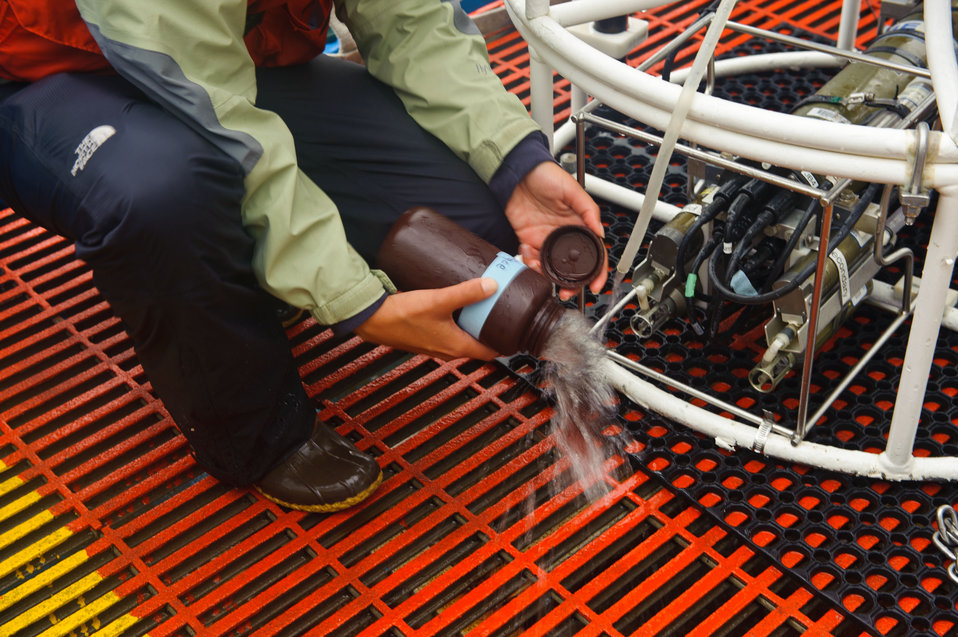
August 7, 2011 Good thing for rain gear!

When you head out on a survey like this, especially off the coast of Maine, don't expect to stay dry!

In this photo we're rinsing the smaller sample collection bottle. Multiple rinses ensures we only capture the water specifically from that depth.